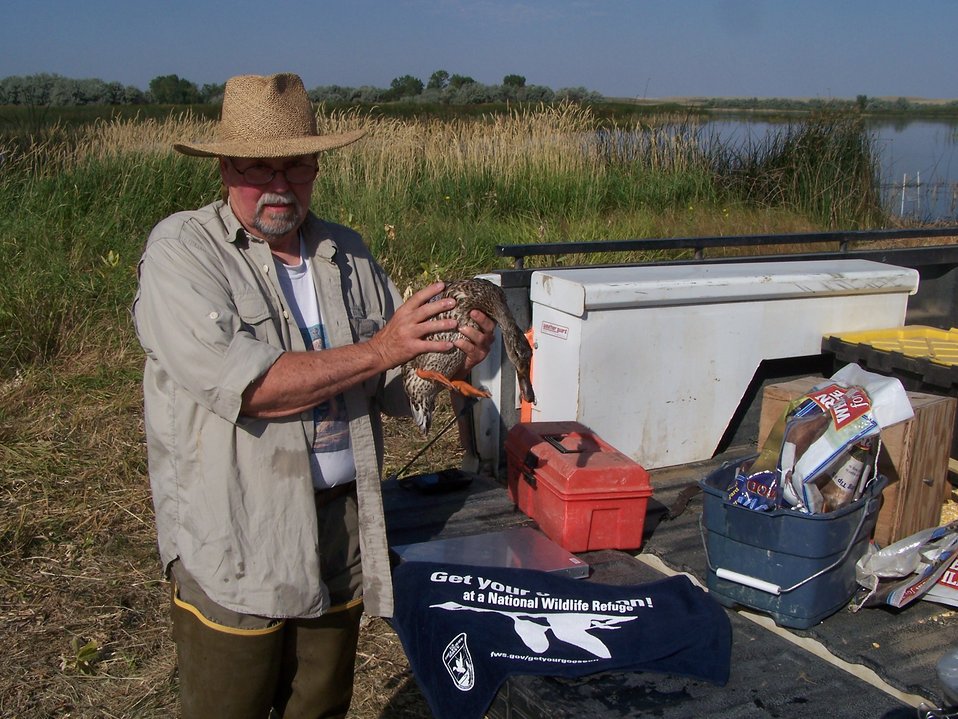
Get Your Goose On! - Duck Banding Style

Retired Private Lands Biologist, Bruce Barbour, Gets His Goose On while Banding at Bowdoin NWR.